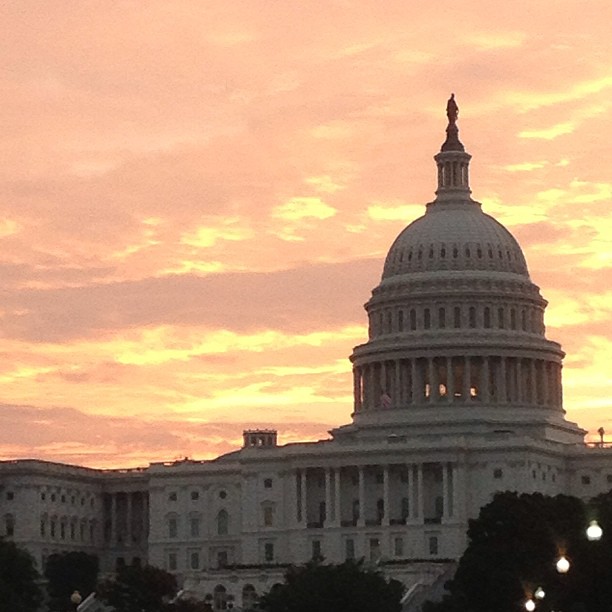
Sunrise at U.S. Capitol #DC